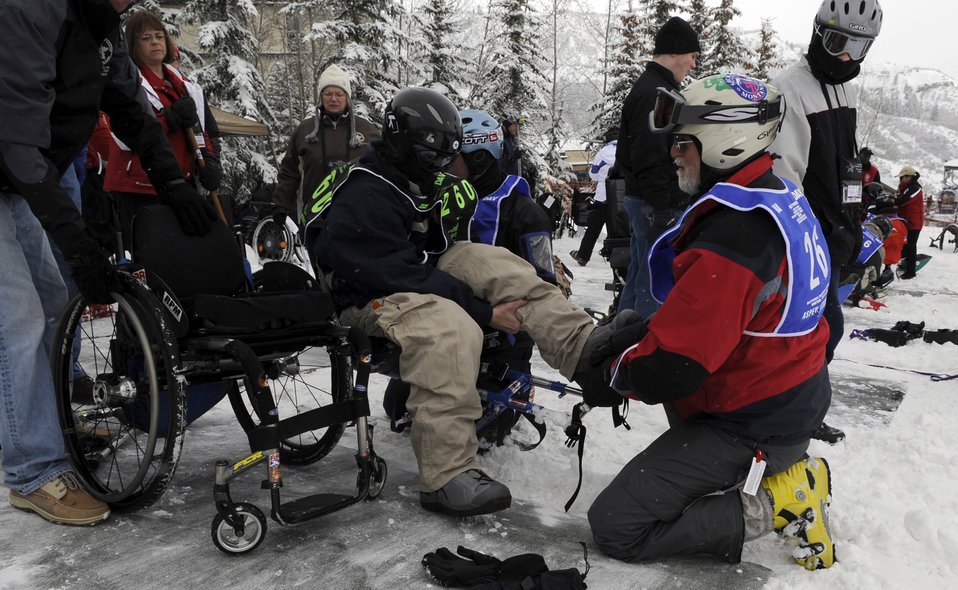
Winter rehabilitation clinic shows veterans potential

Senior Airman Shawn O'Neil exchanges his wheelchair for his turn to mono-ski with the help of an instructor during the 23rd National Disabled Veterans Winter Sports Clinic held March 30 at the Snowmass Village, Colo.